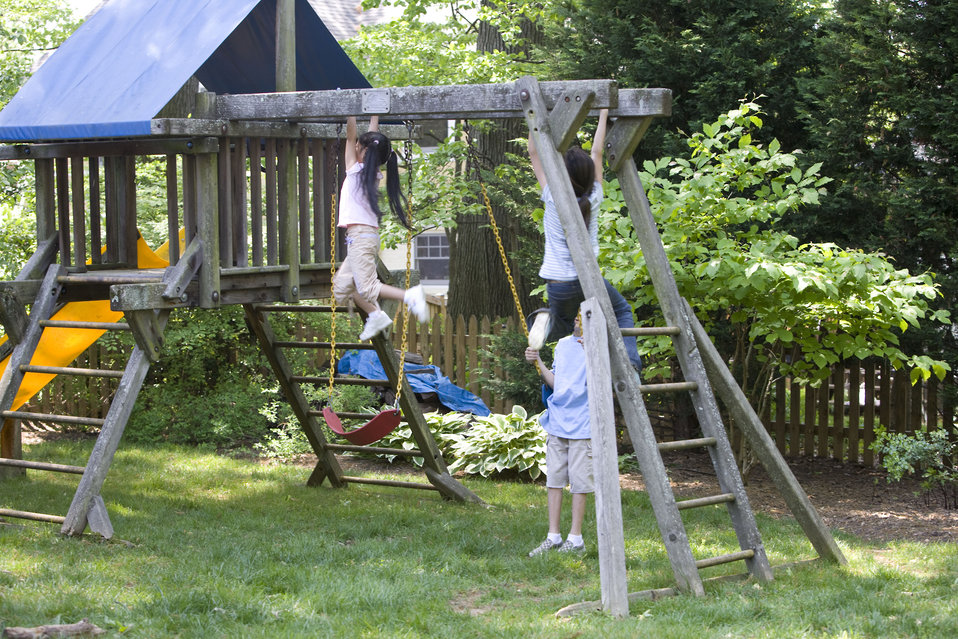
Children love playing outside, and these children were thoroughly enjoying their wooden swing set, and all were having fun in the fresh outdoor air, and the beautiful weather. It's important to note that older wooden playsets may have been treated with arsenic and/or creosote, and therefore, parents need to know if these chemicals were used in their manufacture.